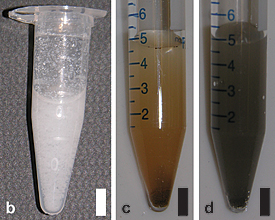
GEMBE; lab-on-a-chip

NIST GEMBE microfluidic sample analysis system - Three complex samples that can be successfully analyzed by the technique: (b) whole milk, (c) dirt and (d) coal fly ash.